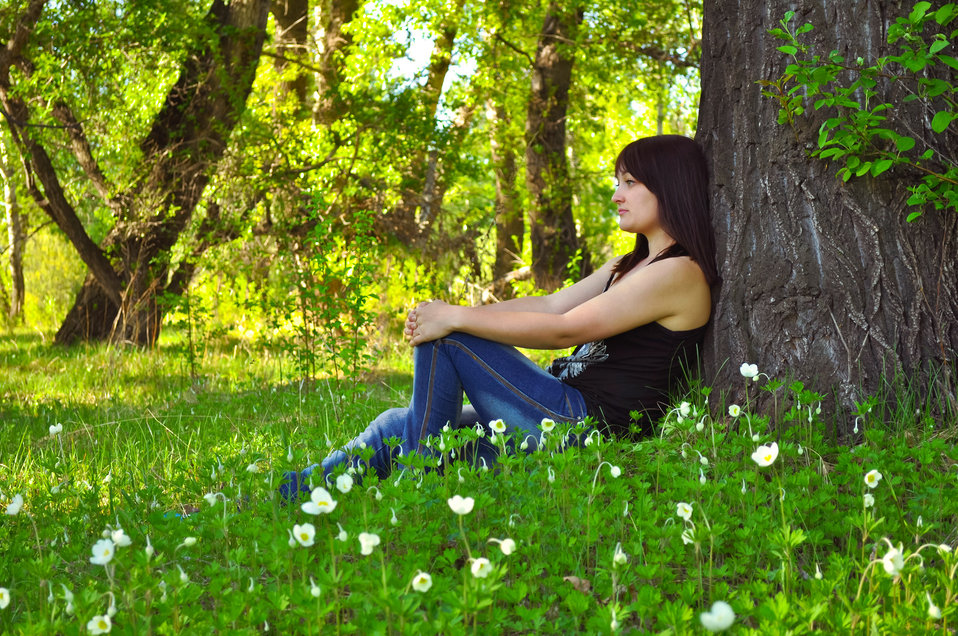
Girl

The girl in the woods.